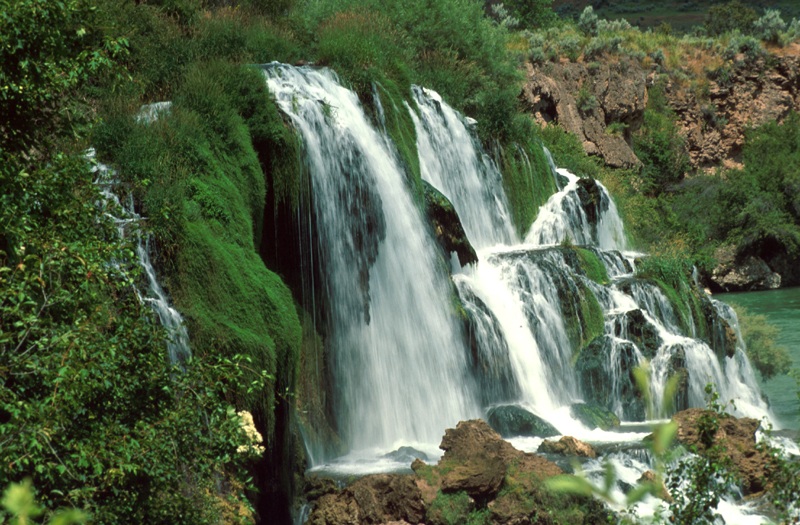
Fall Creek Falls Snake River Canyon